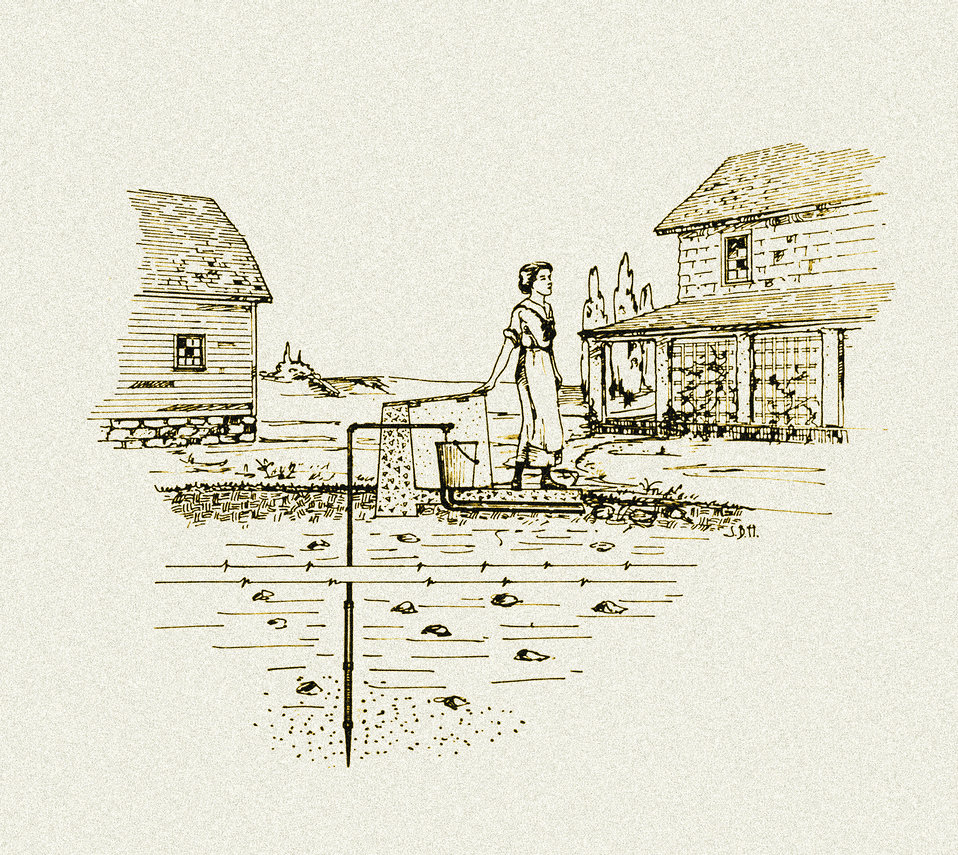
This historic diagram, which had been digitally enhanced and colorized, depicted a cross-sectional representation of a properly constructed 'flowing' well that was being used as a farm's potable water supply. The pipe was sunk far into the ground allowing for maximum natural filtration offered by the surrounding rocks, sand, and gravel. The end of the pipe was protected against damage, while any water overflow was directed through a drain away from the water source. The receptacle used for capturing the water never touched the sources, thereby, reducing the chances for contamination.